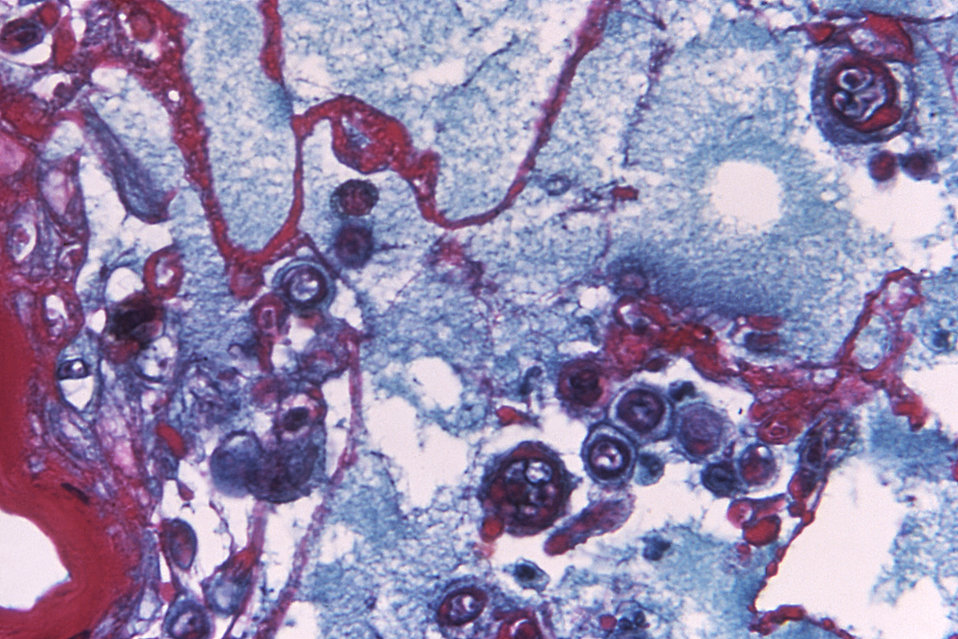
Under a magnification of 500X, this photomicrograph reveals some of the cytoarchitectural histopathologic changes which you'd find in a human skin tissue specimen that included a fluid-filled chickenpox, or varicella zoster virus lesion.